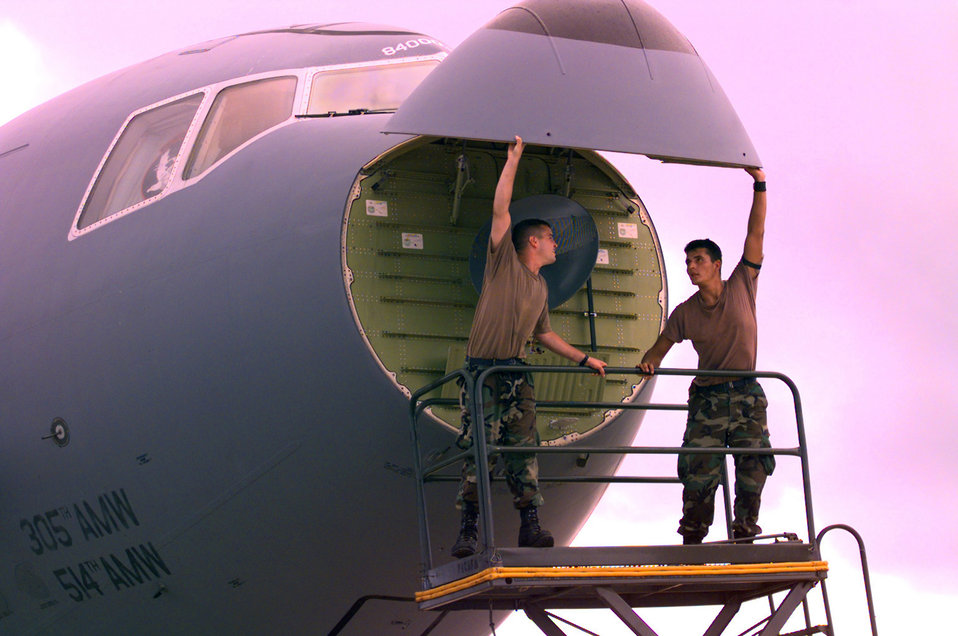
Nose job

OPERATION SOUTHERN WATCH -- Senior Airman Daryl Picard (left) and Airman First Class Lee Devalinger, from the 605th Aircraft Generation Squadron , McGuire Air Force Base, N.J., lower the nose cone of a KC-10 refueler after changing the weather radar dish, Feb. 24. Both the aircraft and the members are with the 2nd Air Expeditionary Group in Diego Garcia, British Indian Ocean, supporting operation Southern Watch.